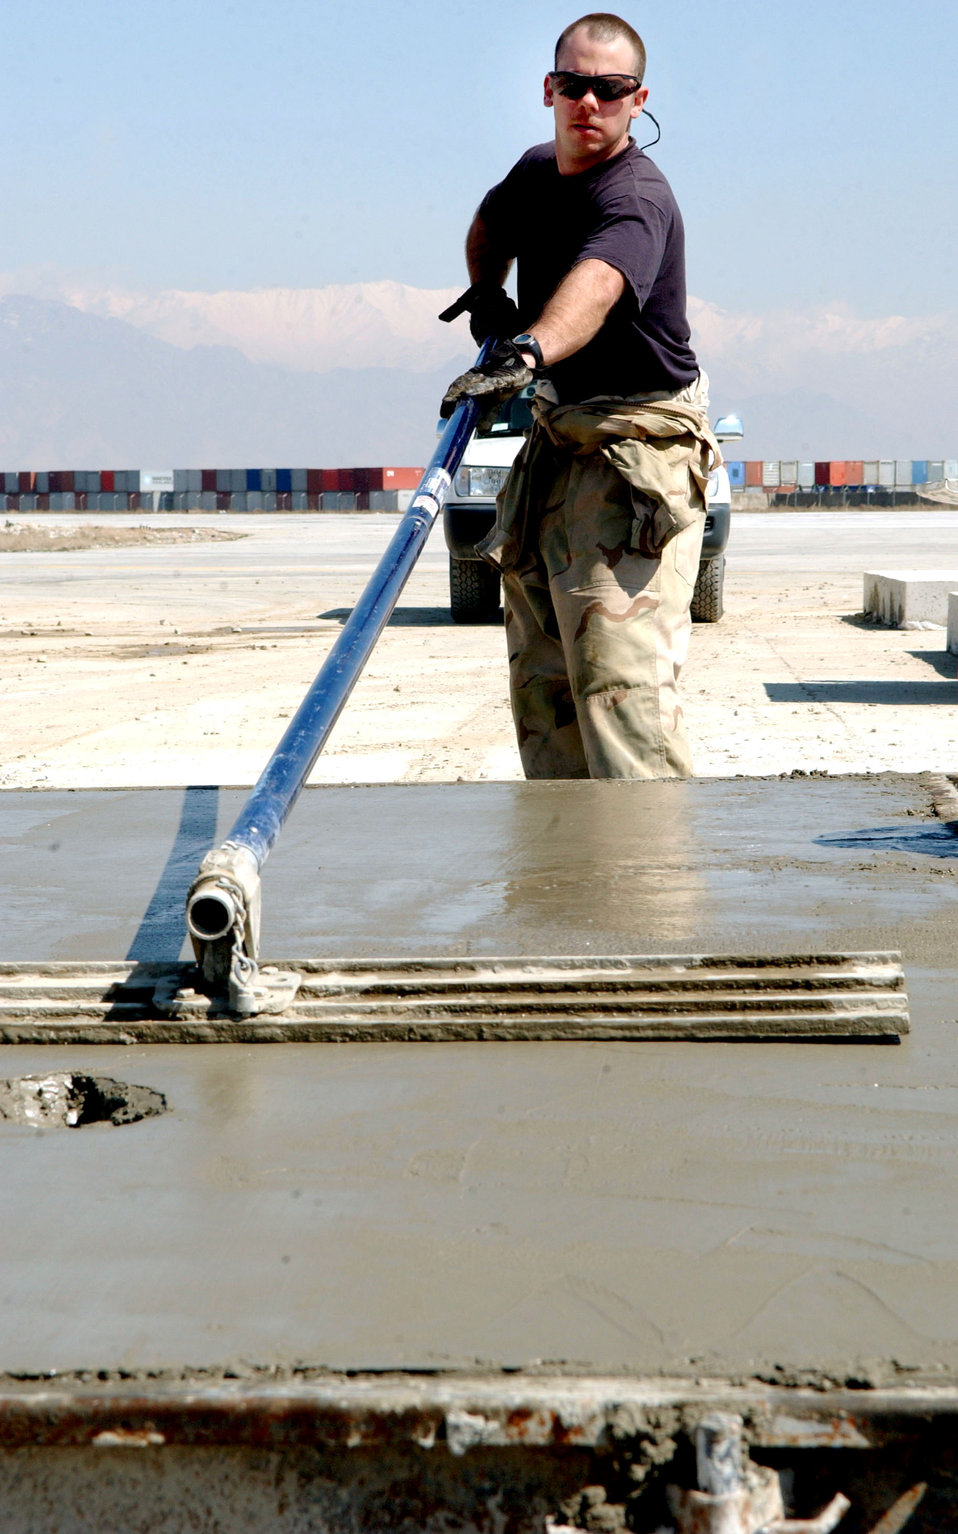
Civil engineers prepare to 'close the gaps' on Bagram's flightline

BAGRAM AIR BASE, Afghanistan -- Staff Sgt. Chad Walter finishes the concrete on one of the 28 precast runway replacement slabs destined for the 9,800-foot runway here. He is assigned to the 455th Expeditionary Civil Engineer Squadron.